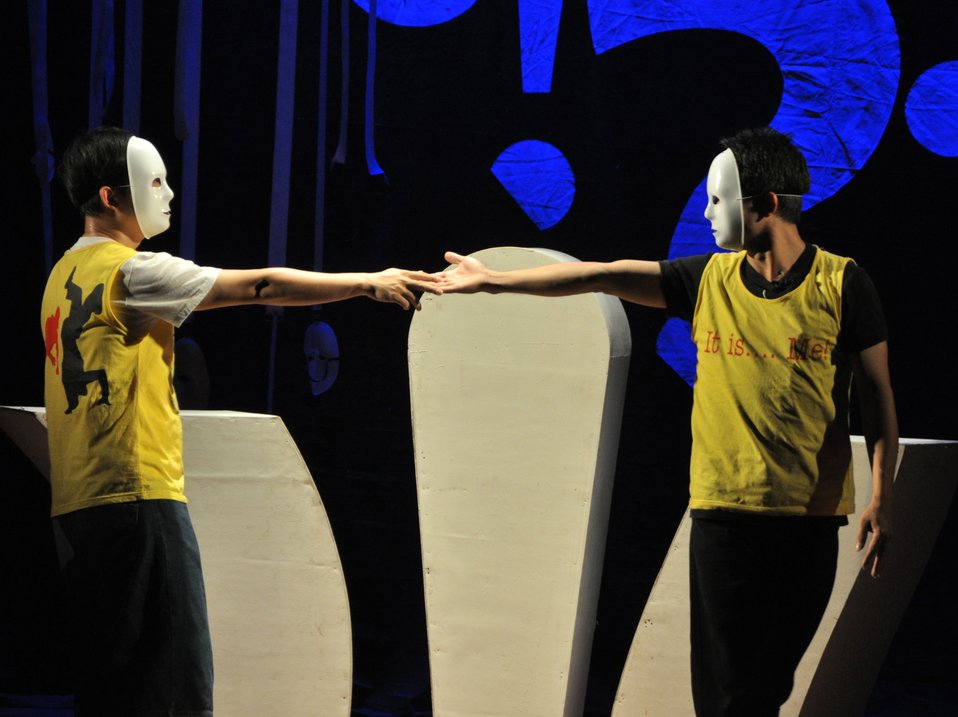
PEPFAR Musical Questions and Exclamations

Hanoi, May 17, 2013